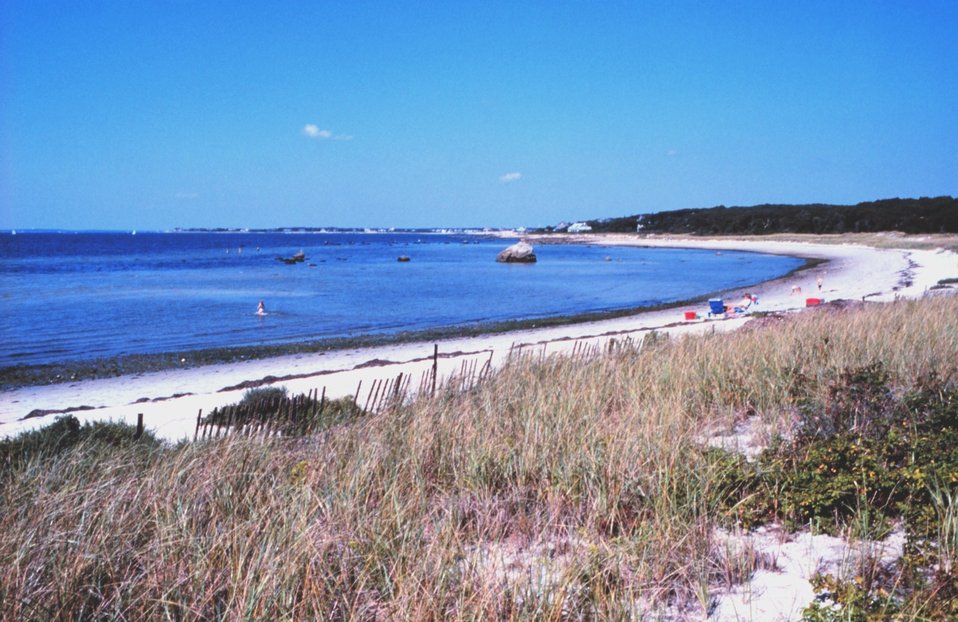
Buzzards Bay, West Falmouth